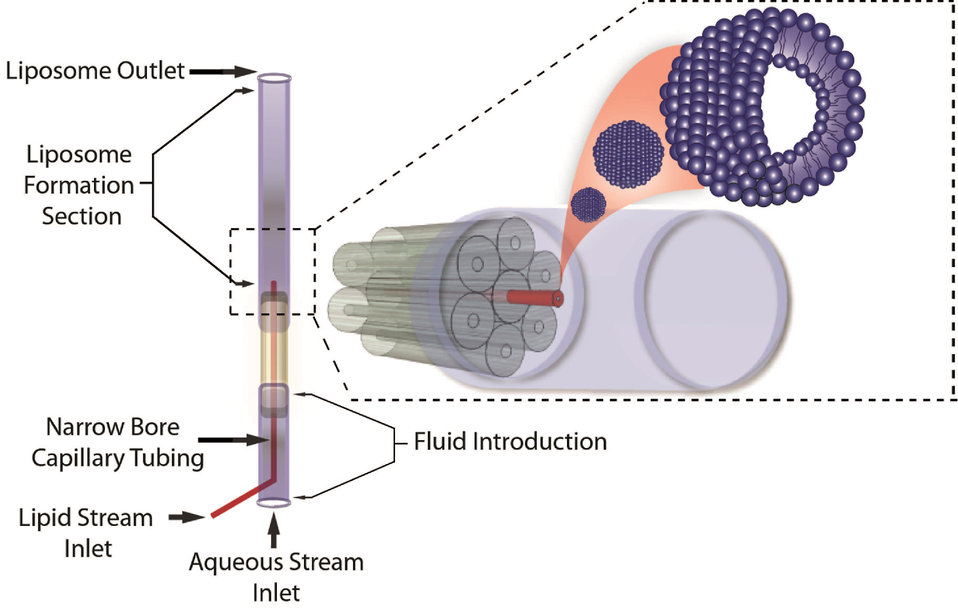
3D-microfluidic Hydrodynamic Focusing Device

Schematic of the NIST/University of Maryland 3D-microfluidic hydrodynamic focusing device for manufacturing vesicles known as liposomes. Phospholipids dissolved in alcohol flowing through the center capillary (red) mix with a water-based buffer solution added through the six surrounding tubes. Liposomes are created downstream from the convergence point.